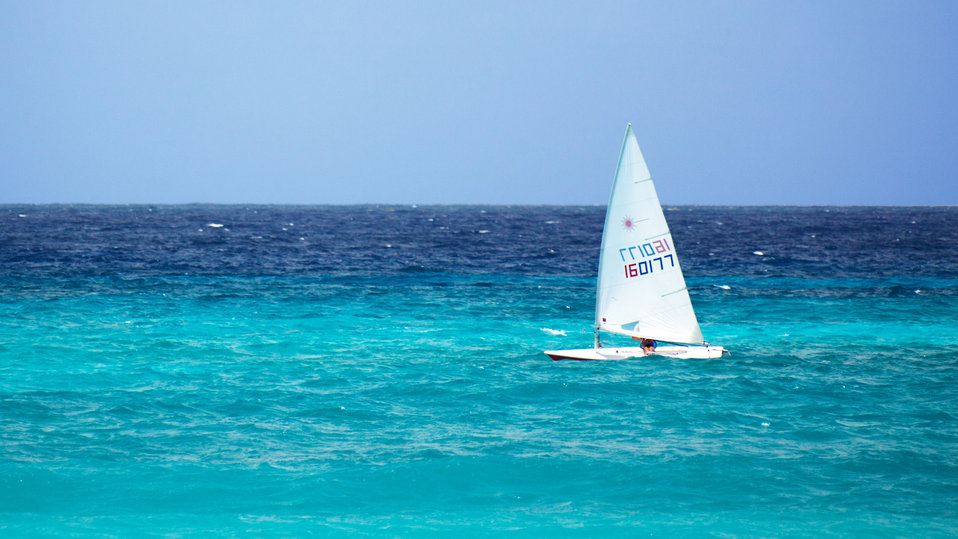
Small yacht at sea

Small yacht at the sea.